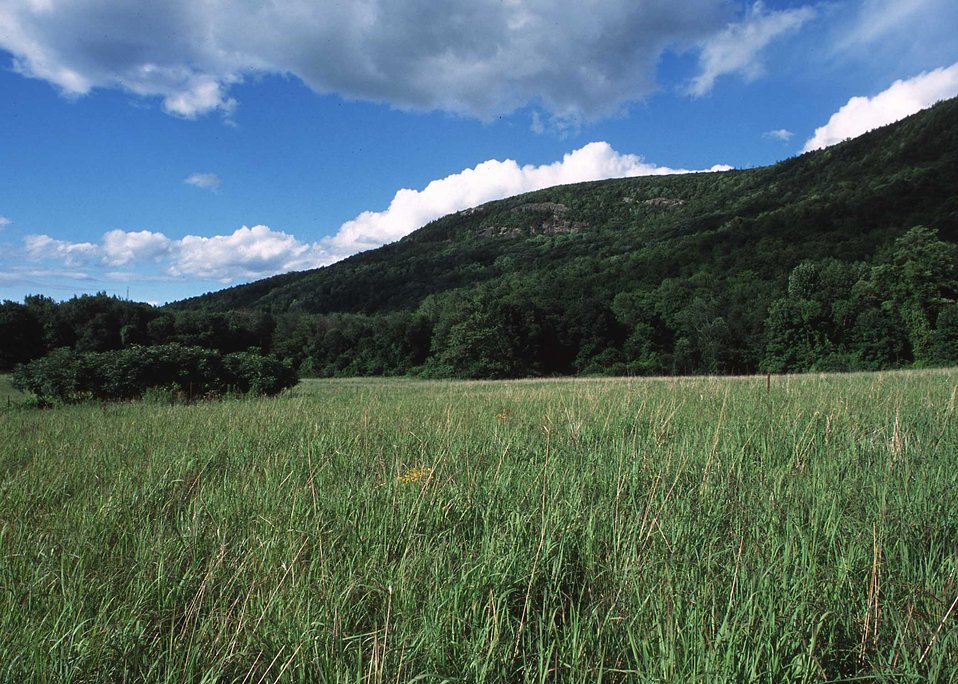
Warm season grassland habitat restoration project in Lichfield County.